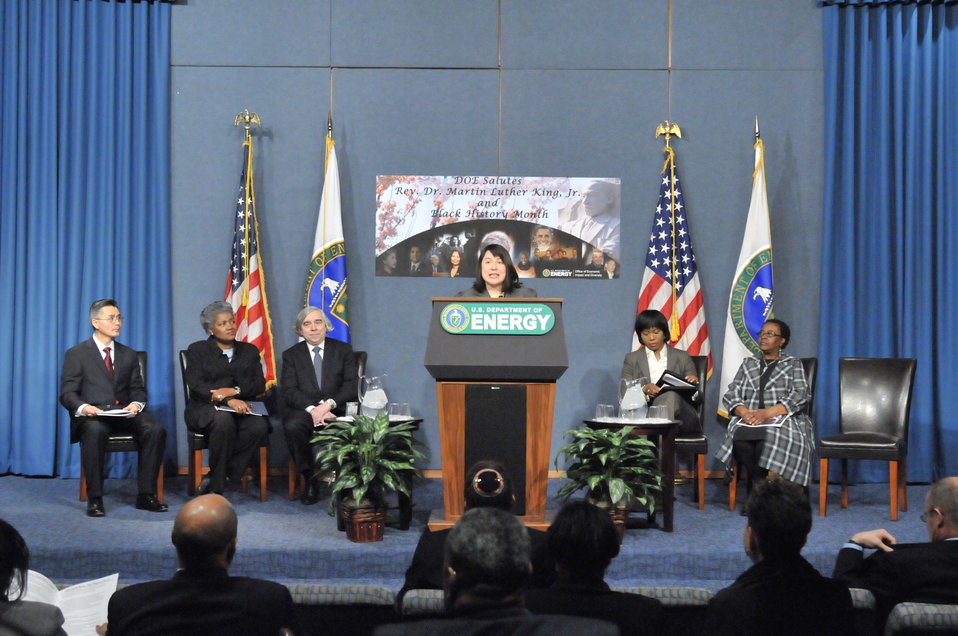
Department of energy -martin luther king / Black history month commemorative program with doe secretary e. Moniz in attendance